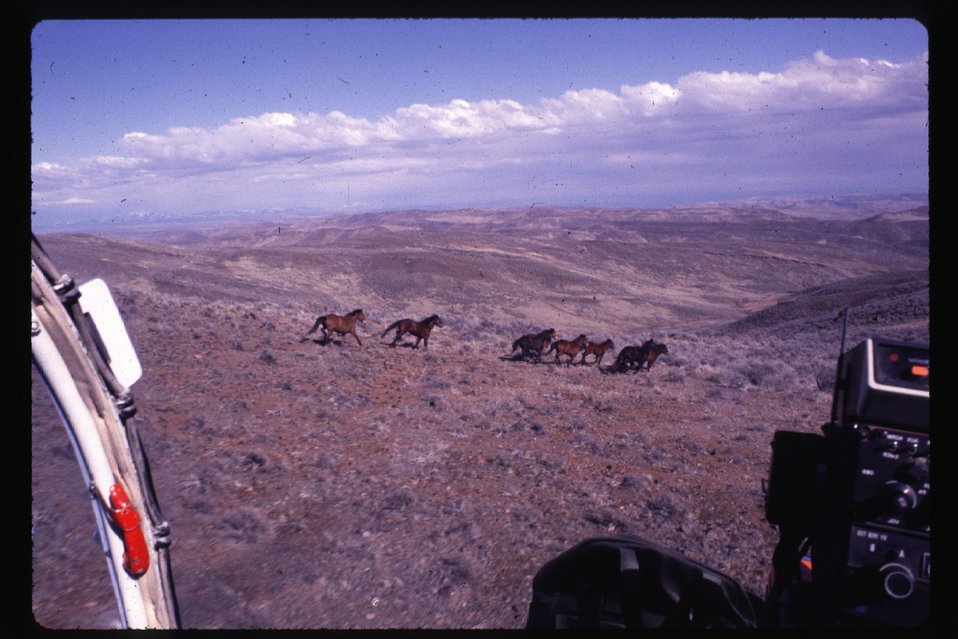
Wild horse roundup by helicopter Wild Horse and Burro Adoption Program LSRD Lower Snake River District